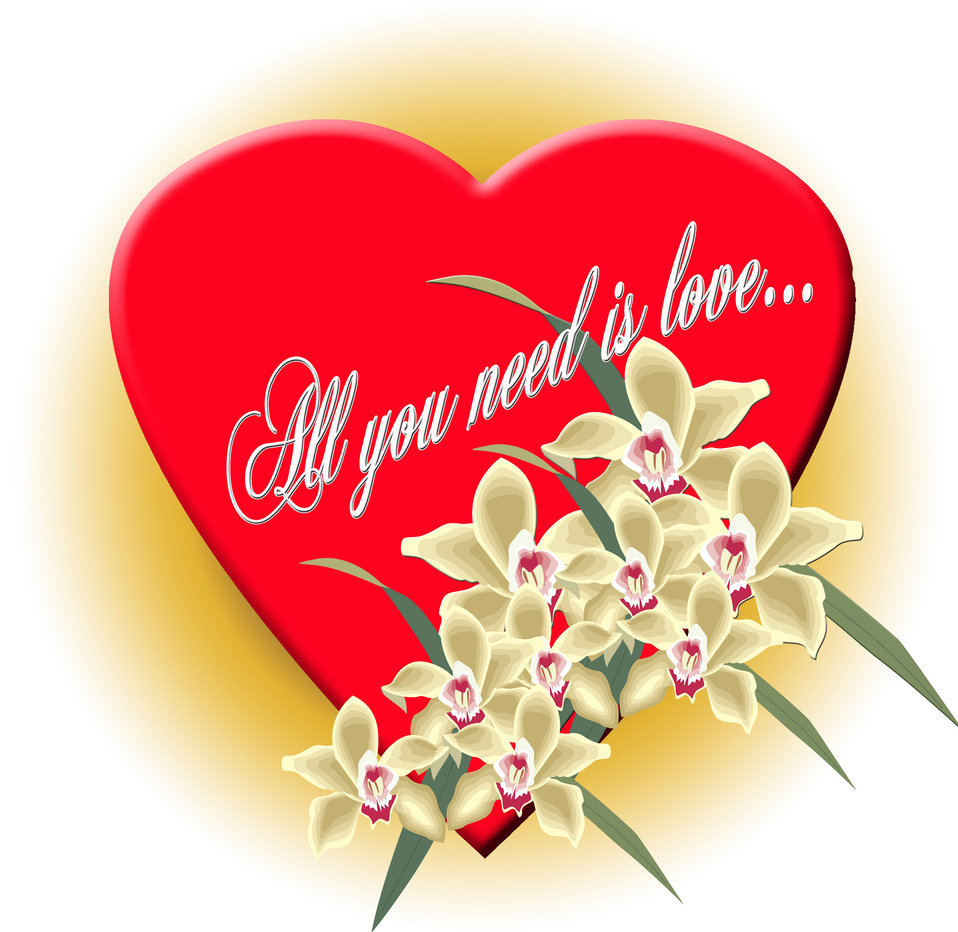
All you need is love!

Illustration of a heart with the sentiment...all you need is love....